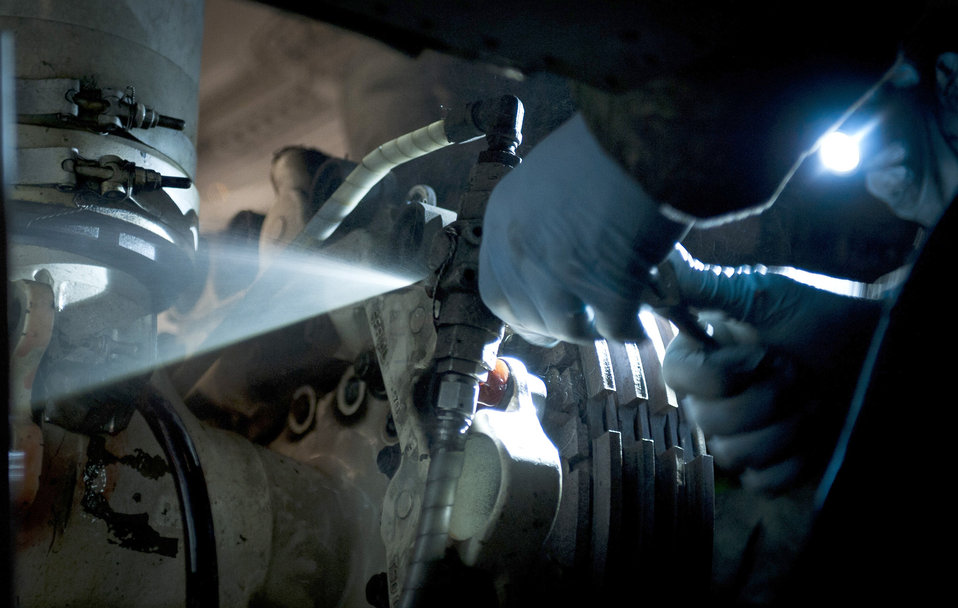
C-130 maintenance

Crew chiefs from the 374th Aircraft Maintenance Squadron perform maintenance on a C-130 Hercules March 31, 2011, at Yokota Air Base, Japan.